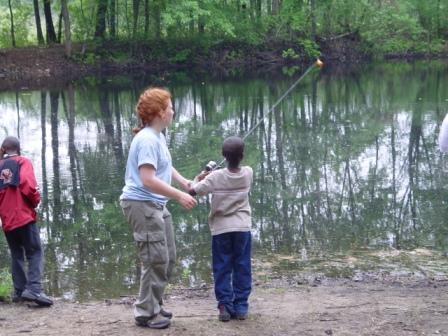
Great Meadows Fishing Day 2010

Great Meadows National Wildlife Refuge in Massachusetts holds an annual fishing day where all anglers -- beginners and experienced -- join refuge staff and other experts for a day filled with fishy fun!

Visitors learn how to fly-cast, spin-cast, and even tie your own fly. All equipment and instruction is provided, and there are always games, crafts, music and face painting as well.